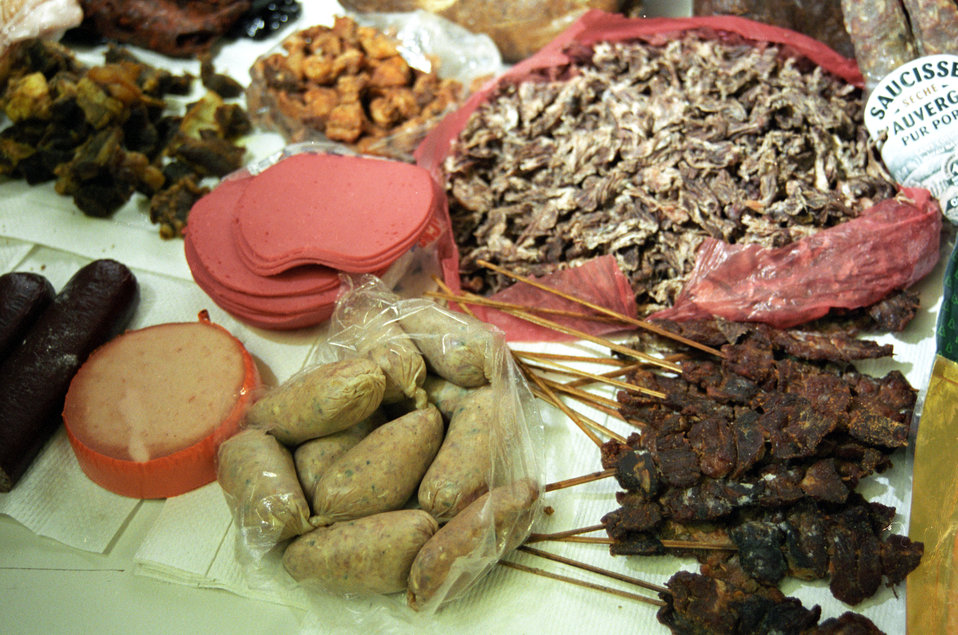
Food contraband intercepted at Washington Dulles International Airport in Chantilly, VA on March 14, 2001 is held for disposal at the airport. The food was concealed in passengers ‘luggage and located by a beagle from the Beagle Brigade. The Brigade is a team of beagles and their human handlers who, as part of the U.S. Department of Agriculture's (USDA) Animal and Plant Health Inspection Service (APHIS) inspect luggage at U.S. airports searching for agricultural products. The Beagle Brigade program averages around 75,000 seizures of prohibited agricultural products a year. Unauthorized meat, animal byproducts, fruit and vegetables can carry diseases and pests that have the potential to infect U.S. agriculture. APHIS works in conjunction with the U.S. Customs and Border Protection and the U.S. Public Health Service at entry points to the U.S., including land borders, ports and airports. The Beagle Brigade generally works in the baggage-claim area at international airports. After 911, the Beagle Brigade is under the authority of Homeland Security.